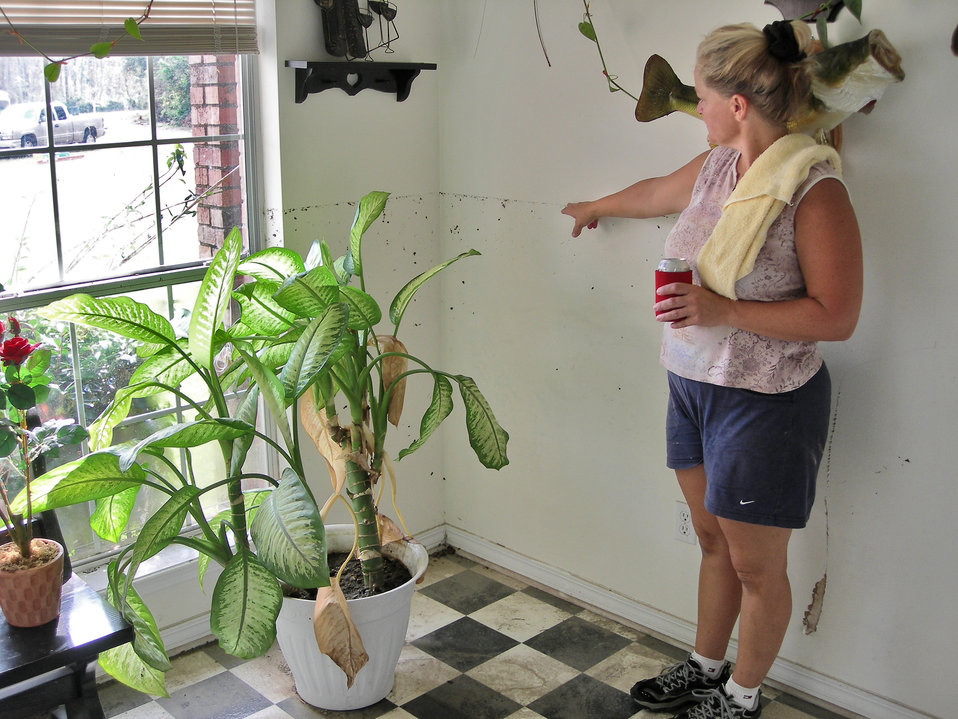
Engineers help clean up

BILOXI, Miss. -- Antoinette Morgan points out the water line that the floodwaters from Hurricane Katrina rose to in the house her family has lived in for 12 years. The drywall and insulation had to be gutted and removed because of mold buildup and health concerns.